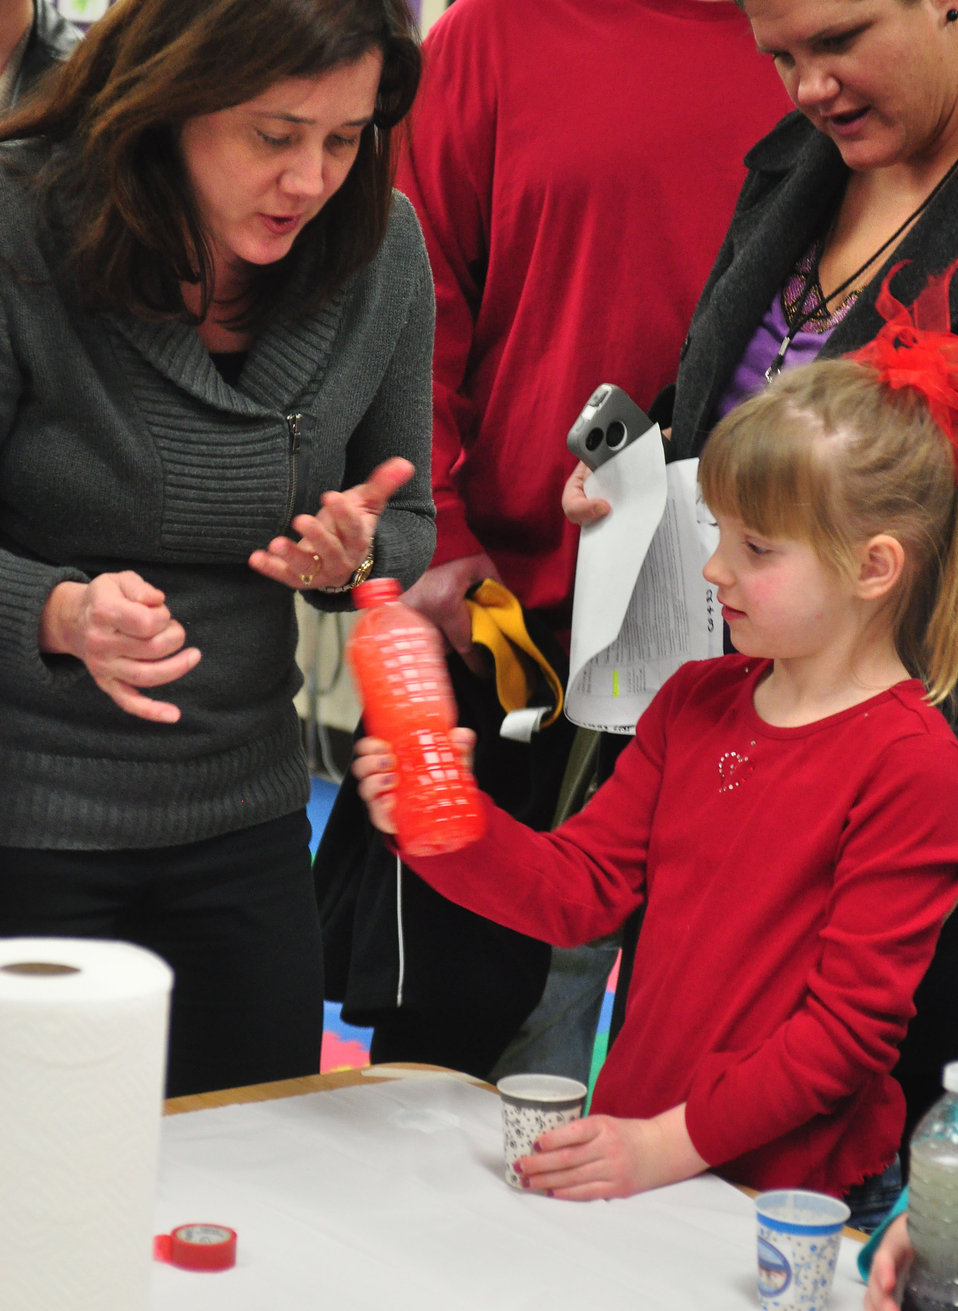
Woodland School STEM Night Oak Ridge 2014

14-013 DOE photo Lynn Freeny 1-23-2014 Oak Ridge Tennessee